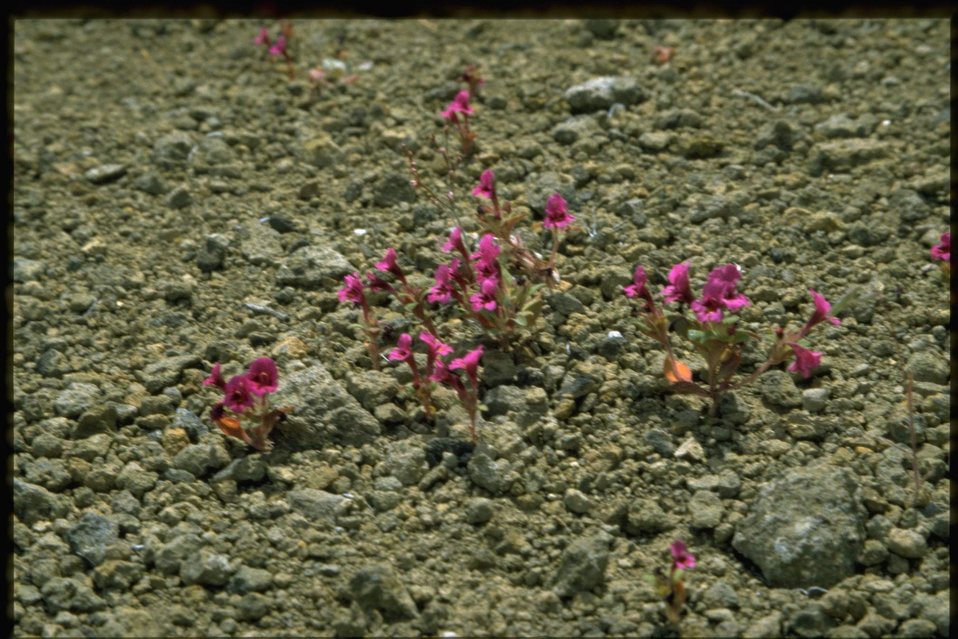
Far shot of Cusick's monkey flower, Minulus cusickii.